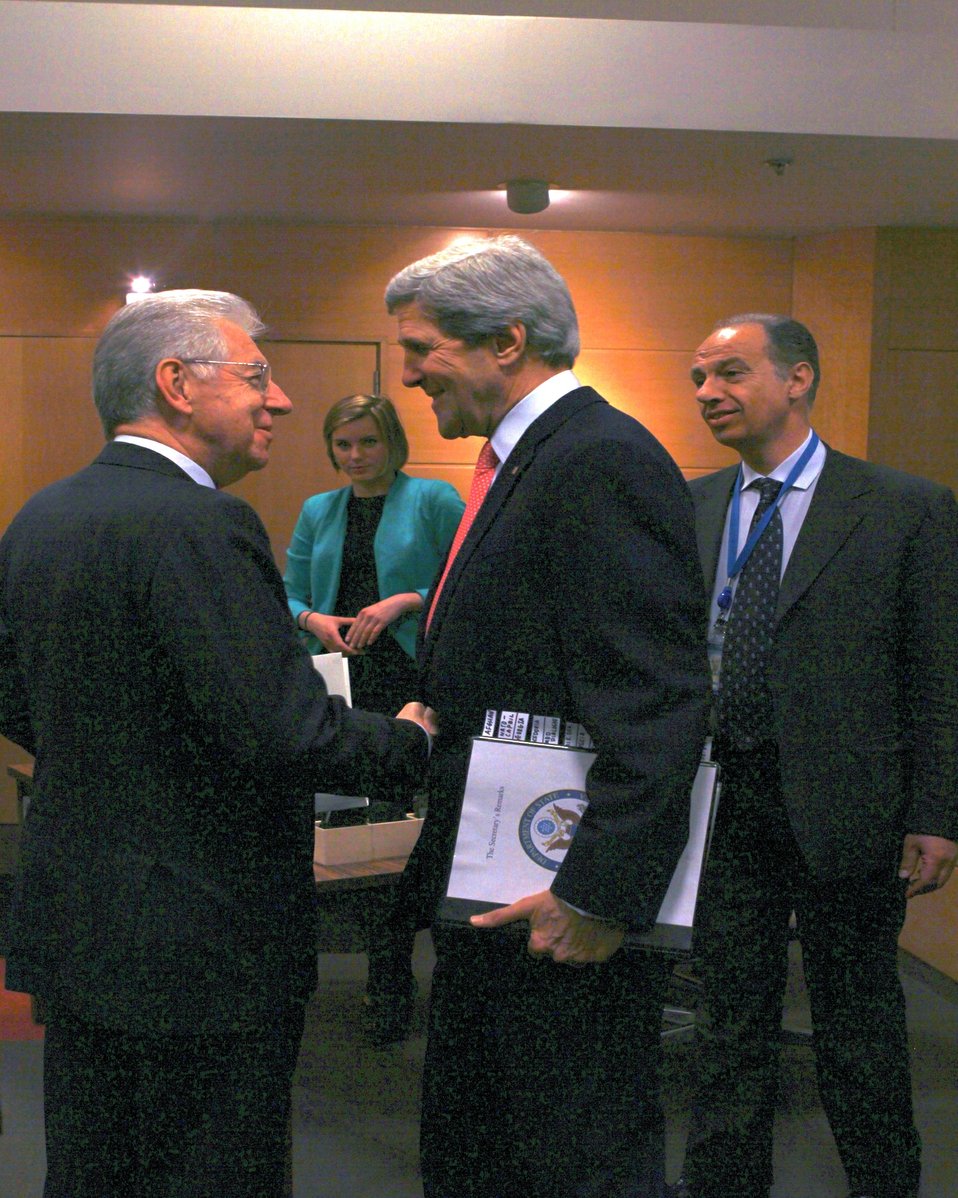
Secretary Kerry Shakes Hands With Italian Prime Minister Monti

U.S. Secretary of State John Kerry speaks with Italian Prime Minister Mario Monti on his way into the opening session of the North Atlantic Treaty Organization (NATO) Council in Brussels, Belgium, on April 22, 2013.